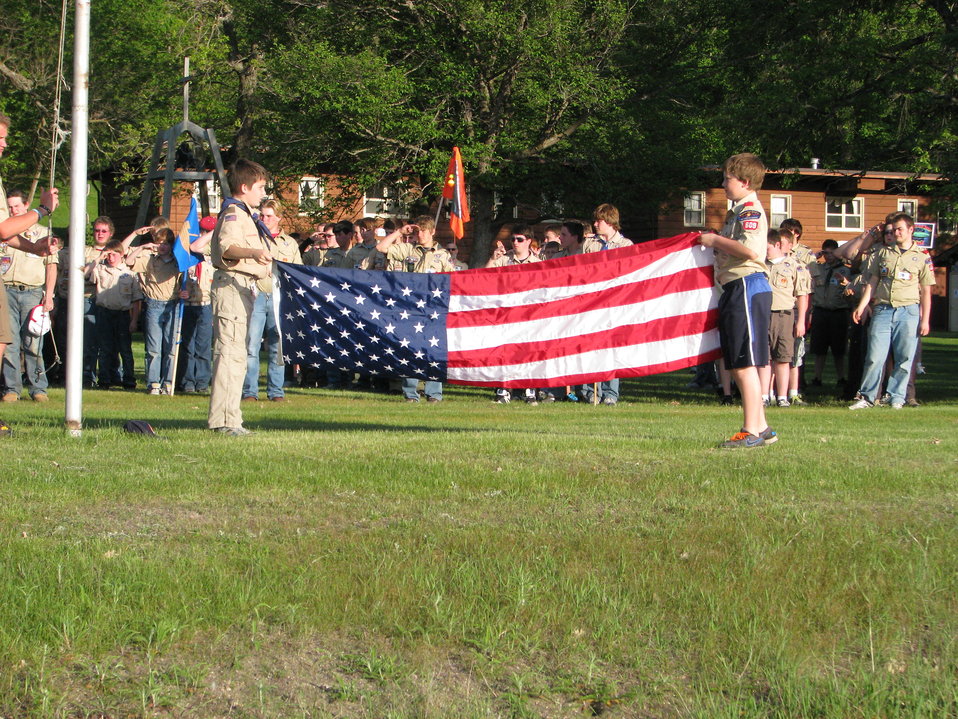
The Closing Flag Ceremony

Pictured here is the traditional Boy Scout flag closing ceremony. The two boys fold the flag without letting it touch the ground.